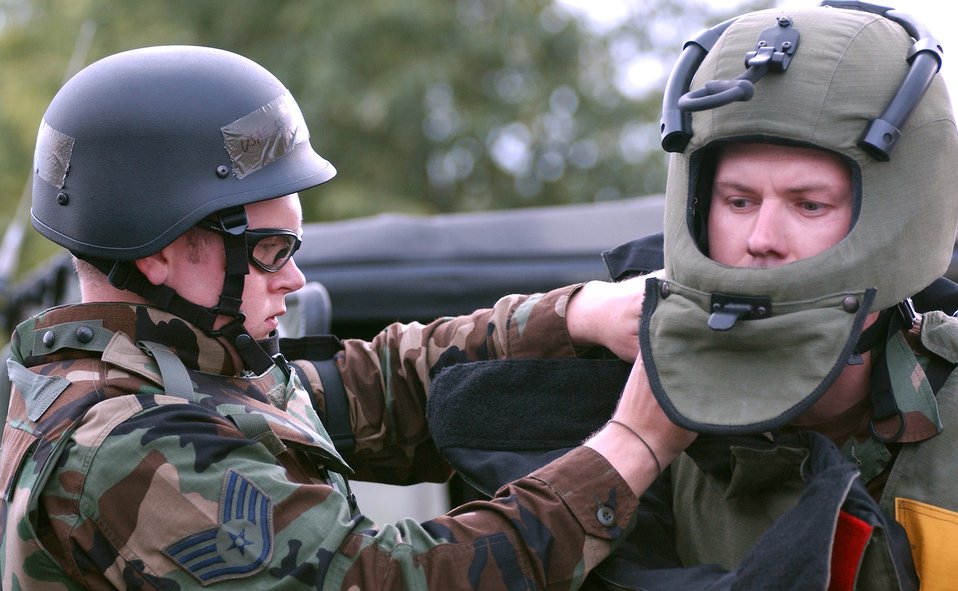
Heavy-duty gear

Staff Sgt. Clayton Tiemen helps Staff Sgt. Justin Surran gear up in a bomb suit at Aviano Air Base, Italy, on Tuesday, June 6, 2006, during a Local Salty Nation training exercise. The heavy-duty Kevlar suit weighs 70 pounds and is used to protect explosive ordnance disposal troops. The NCOs are assigned to the 31st Civil Engineer Squadron.